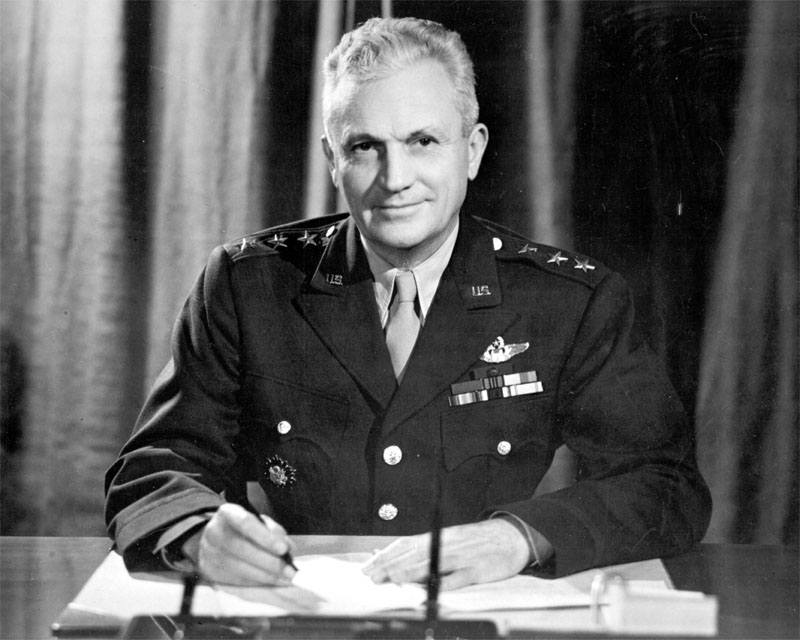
Gen. Frank M. Andrews, theater commander of U.S. forces in the European theater of operations, was responsible for direction of the American strategic bombing campaign against Germany and planning the land invasion of occupied western Europe in 1943.